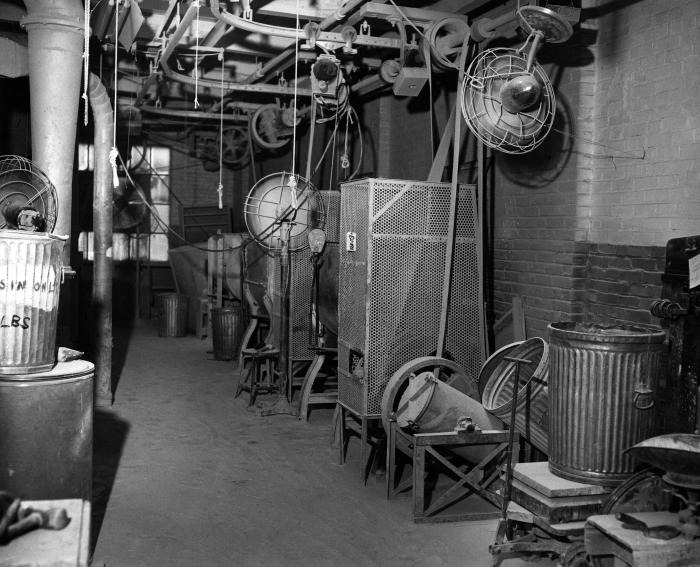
From 1953, this historical photograph was provided by the Center for Disease Control's (CDC), National Institute for Occupational Safety and Health (NIOSH). It depicted the interior of the Precision Grinding Wheel Company, and revealed the ducts and small household-suitable fans that were used in order to provide environmental ventilation. In the 1940s and 1950s, the Industrial Hygiene Division (IHD) investigated hazards associated with activities such as metal grinding. It was in scenarios such as this where there existed the potential for worker health problems associated with industrial metal grinding, including respiratory and dermatologic hazards from inhalation and contact with fungi- and bacteria-contaminated synthetic metal-working fluids, oil mists, and grinding dust in the machining areas.